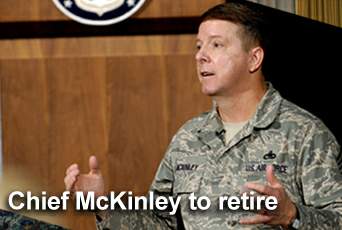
Air Force's top enlisted Airman to retire

Chief Master Sgt. of the Air Force Rodney J. McKinley is set to retire June 30 after serving three years as the service's top enlisted Airman. He is the 15th chief master sergeant of the Air Force and will have completed 30 years of service to the Air Force.